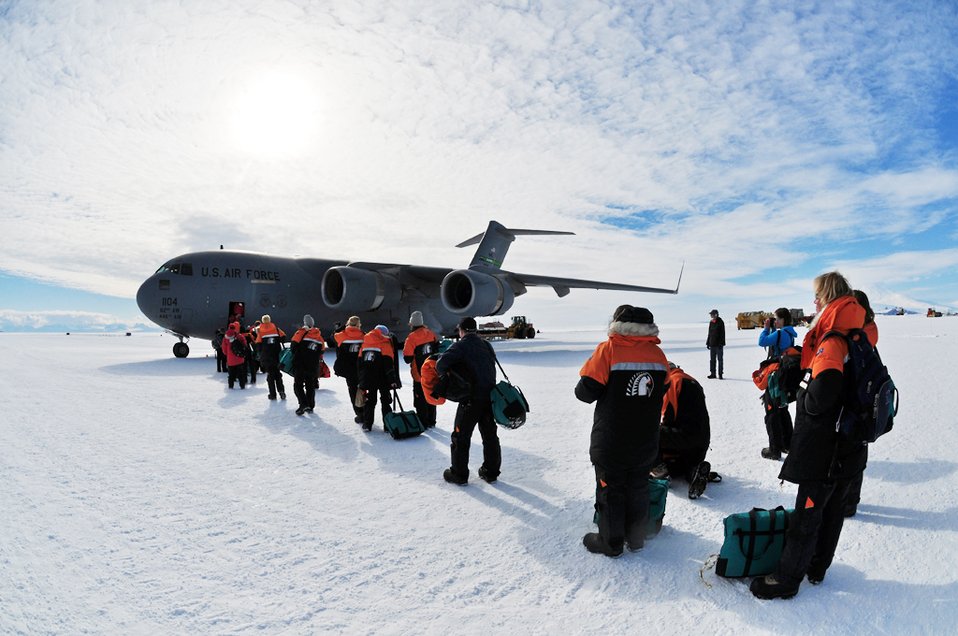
We're leaving on a Globemaster

People living in Antarctica prepare to board a C-17 Globemaster III near McMurdo Station, Antarctica, Dec. 31, 2009, during Operation Deep Freeze. Through this mission, the Defense Department provides logistical support from McChord Air Force Base, Wash., to research activities in Antarctica.